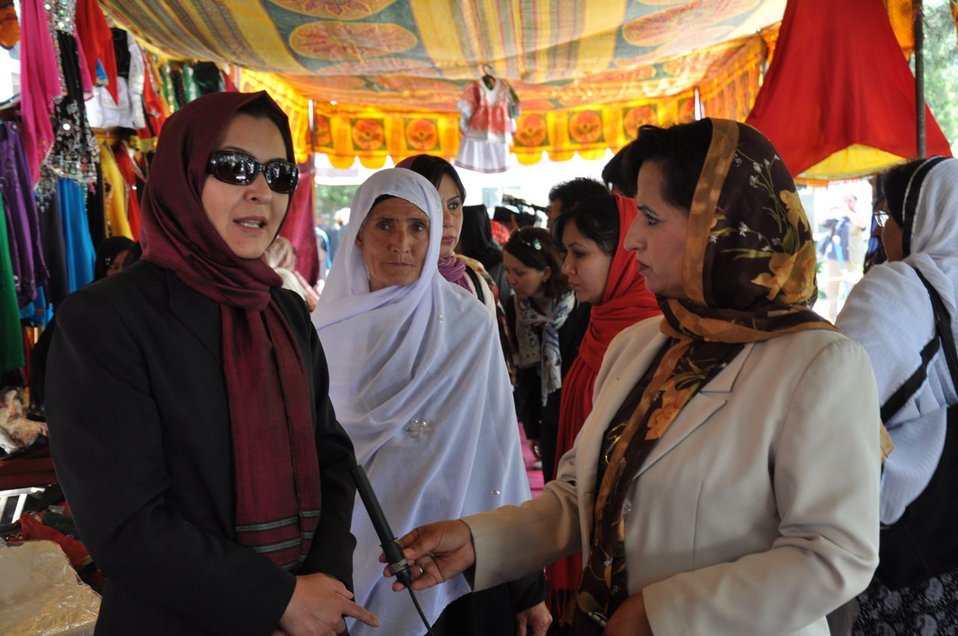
Mother's Day in Afghanistan

The Minister of Public Health interviewed by local media